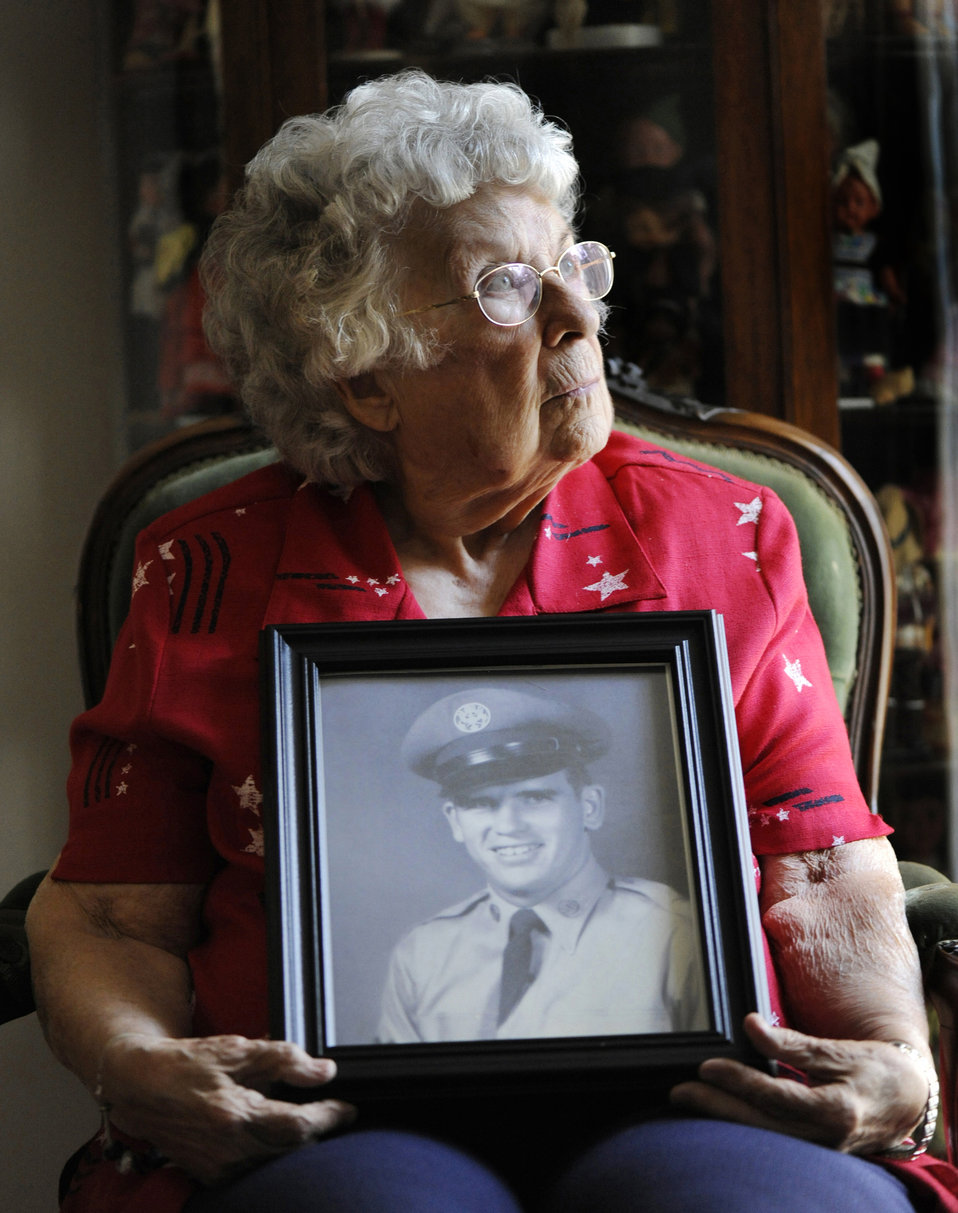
Silver Star hero

Rosalie Bacicia, sister of the late Master Sgt. James Calfee, reflects as she holds a photo of her brother in Houston, Texas, Aug. 22, 2012. Calfee, who was posthumously awarded the Silver Star Medal, was killed in action in Laos in 1968.